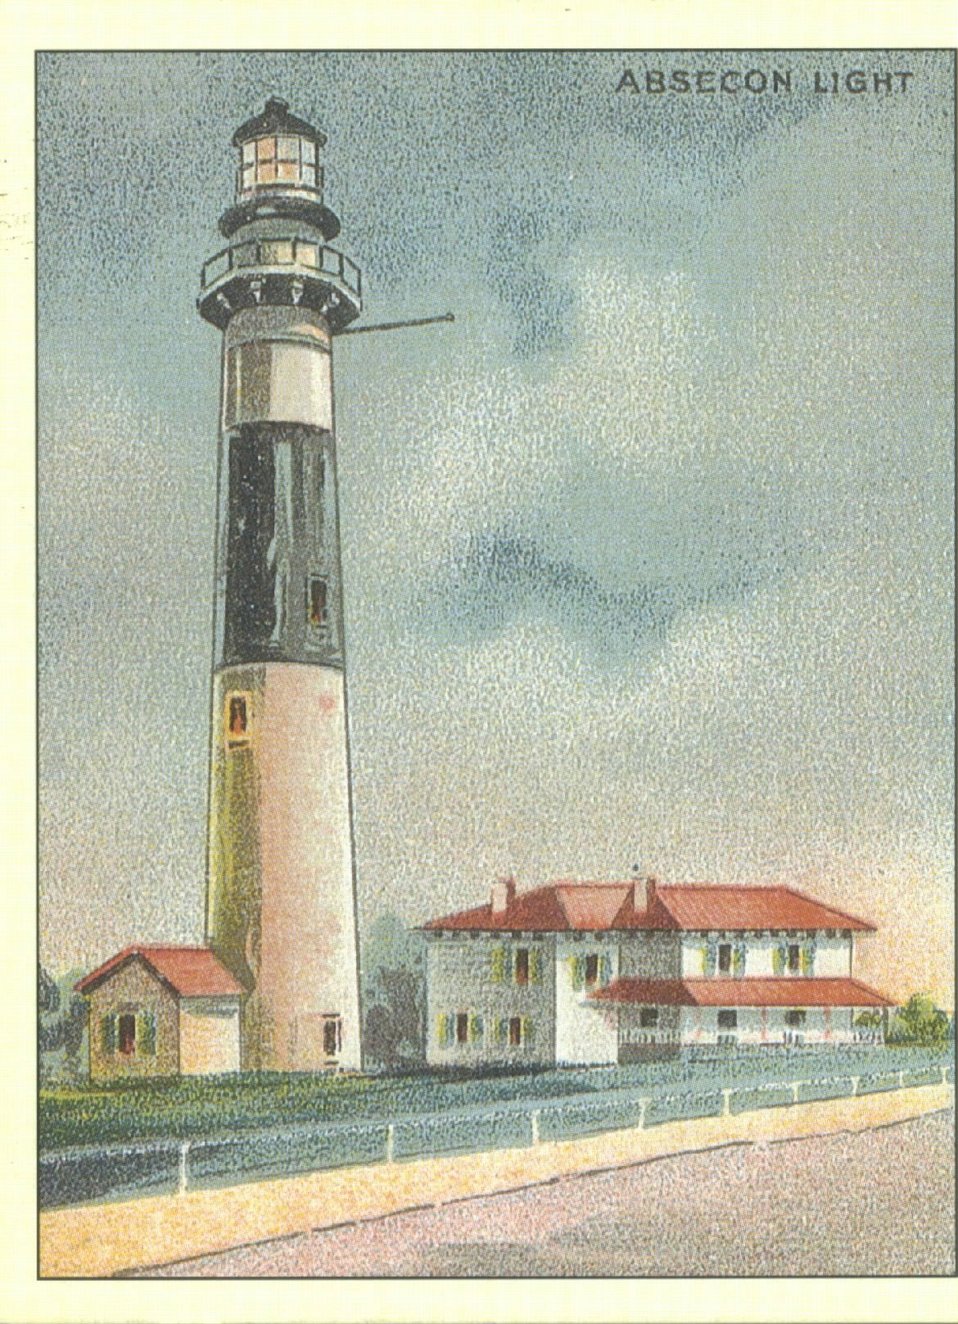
Absecon Light